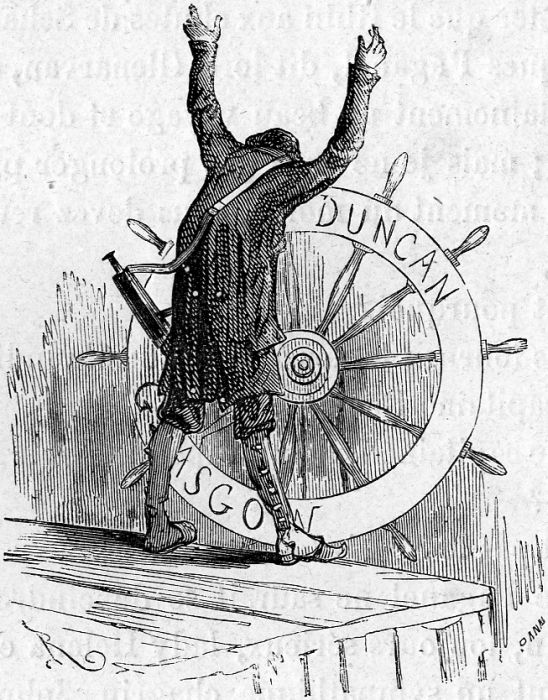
An ilustration from the novel 'In Search of the Castaways; or Captain Grant's Children' by Jules Verne drawn by Édouard Riou. Polski: Ilustracja powieści Juliusza Verne'a 'Dzieci kapitana Granta' autorstwa Édouarda Riou. Français : 'Les Enfants du capitaine Grant', Édouard Riou.